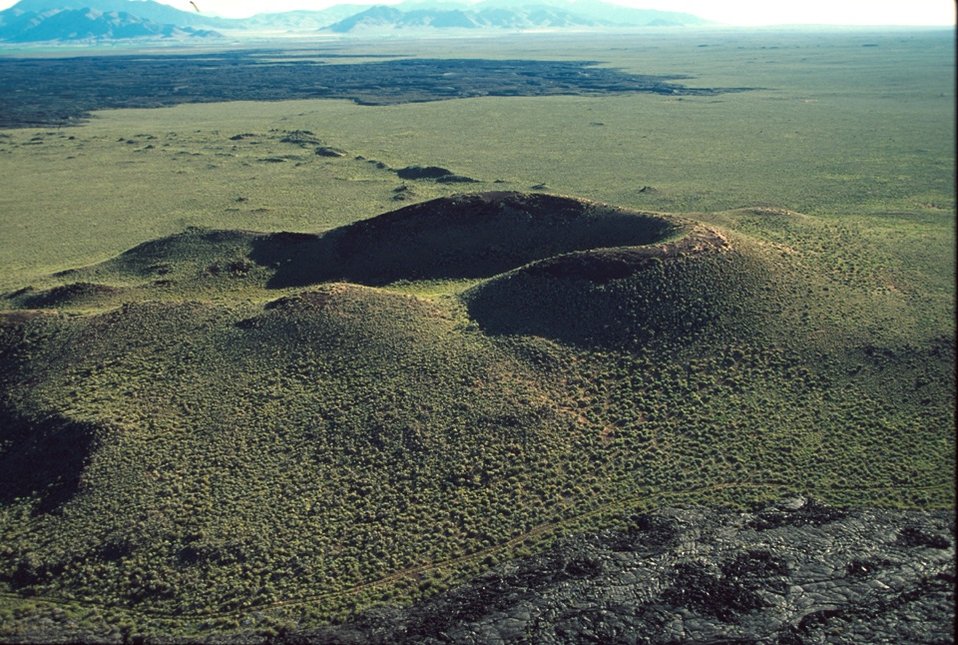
Shoshone Field Office USRD Upper Snake River District